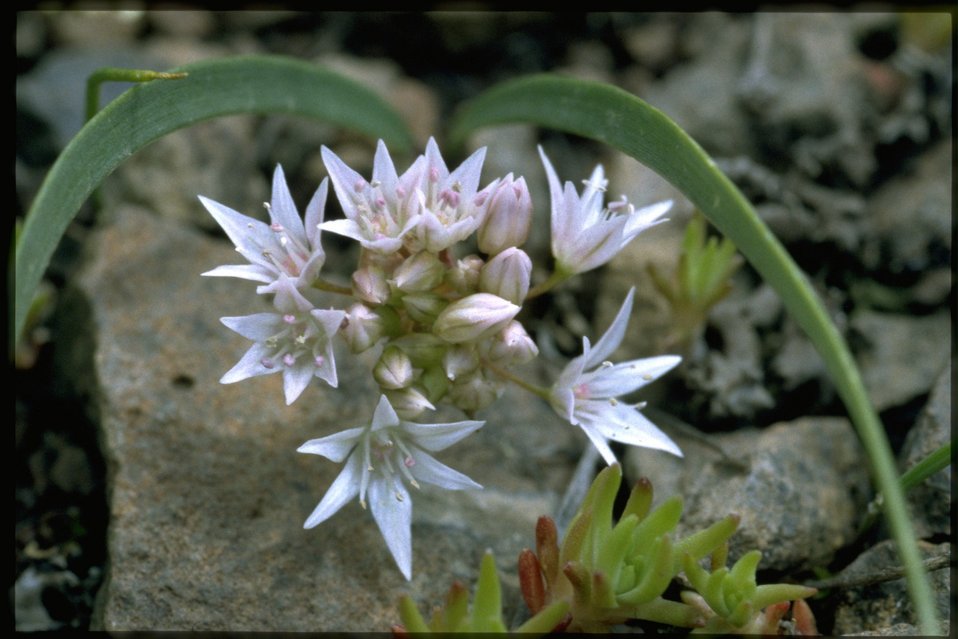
Closeup shot of Tolmie's Onion, Allium Tolmiei, wildflowers.